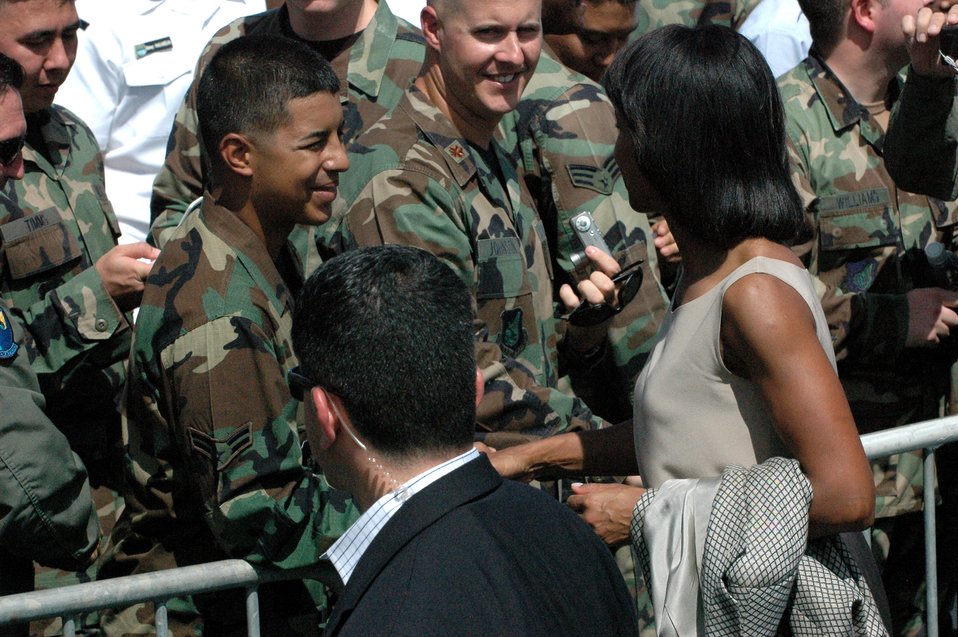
President visits Hickam

Secretary of State Dr. Condoleezza Rice greets troops during her visit with the President George W. Bush Sept. 8 to Hickam Air Force Base, Hawaii.